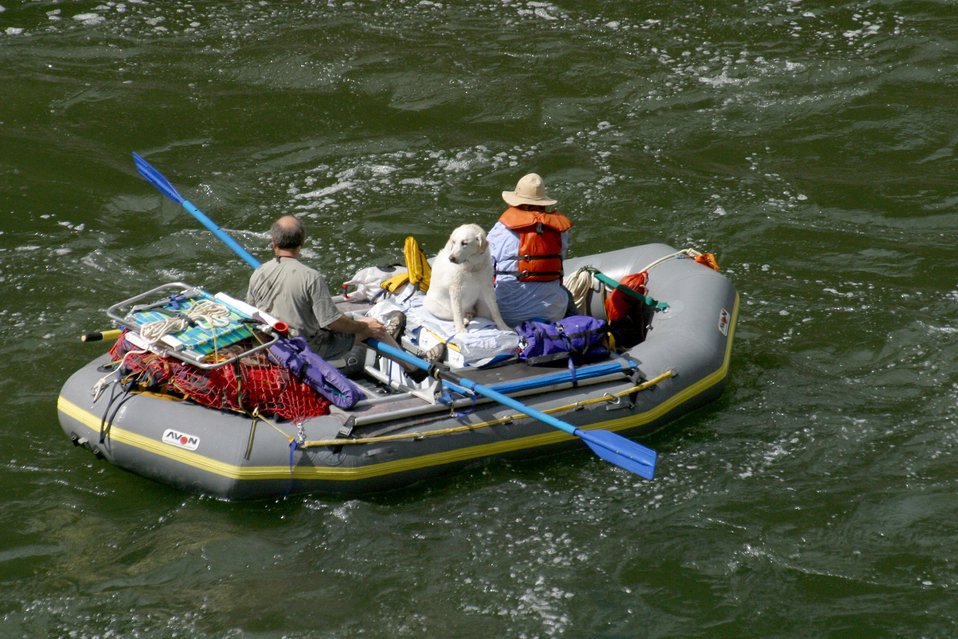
Boaters just after Grave Creek Rapids